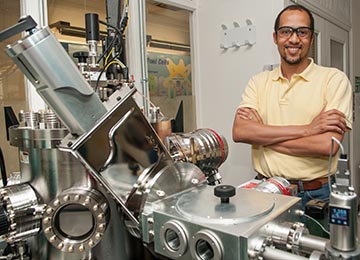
ANL Electrochemical Energy Storage Department, Postdoctoral Fellow Research on membraneless fuel cell equipped an Early Career Research Award Winner with an understanding of electrochemical systems.
The research identifies and creates novel materials that can operate in wide voltage windows with optimal energy densities.